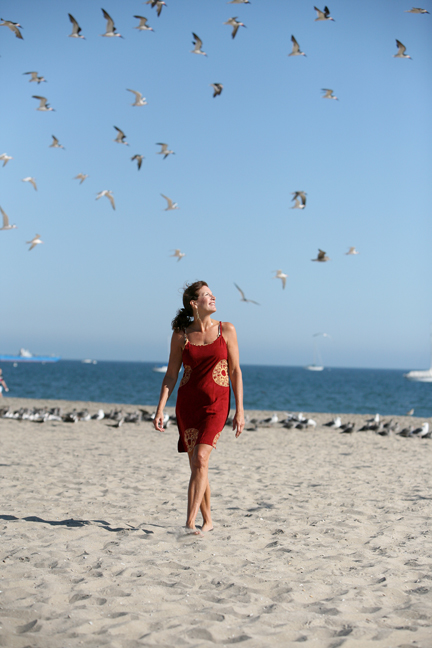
Uploaded by request of Kathleen Barnato and Scott Gibson.

Taken in Santa Barbara, California.

This is one of the widest beaches in Santa Barbara, accessible and enjoyable
even at high tide.